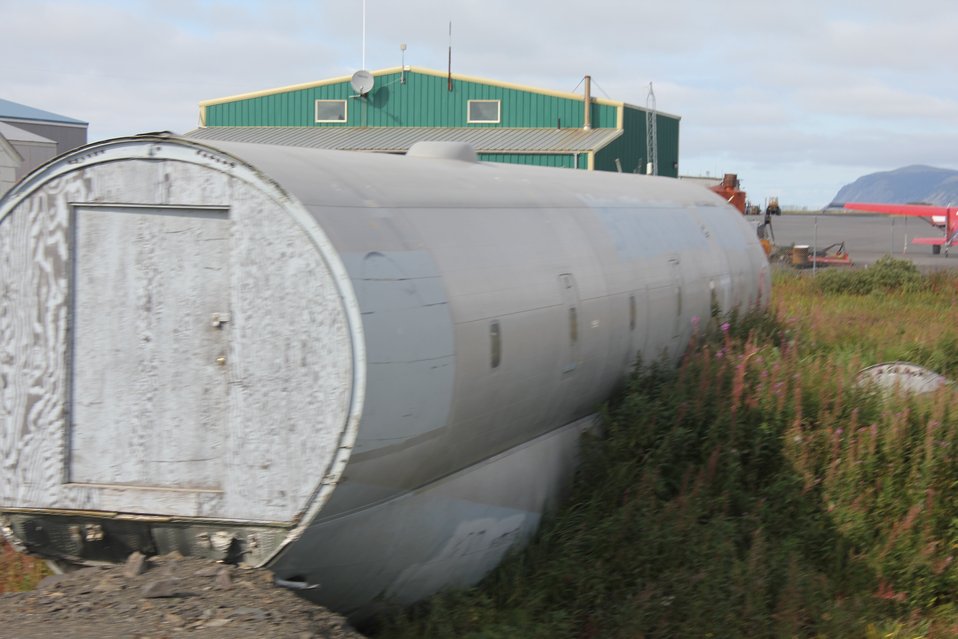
Remains of cargo plane used for storage at Unalakleet Airport.